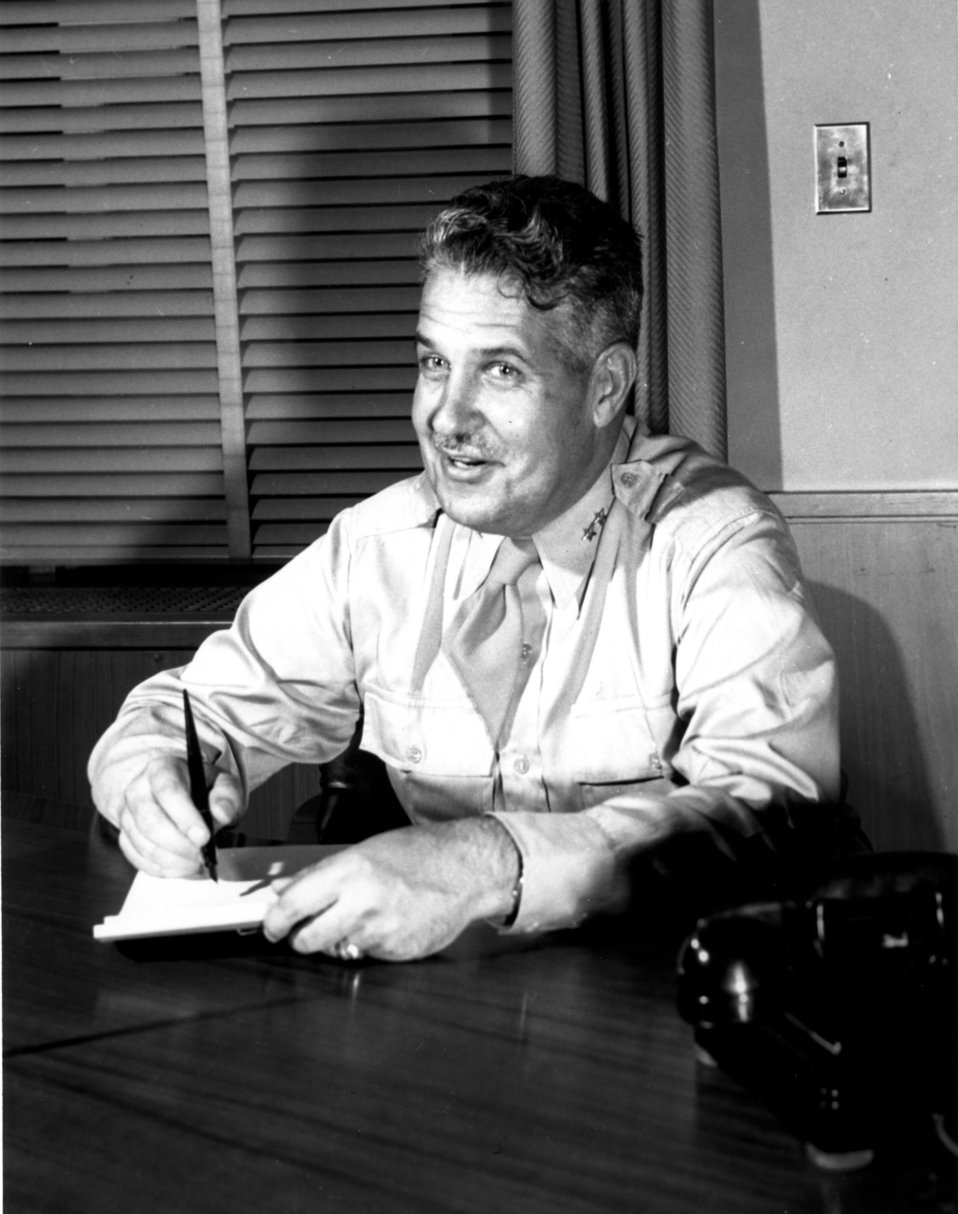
General Groves at Oak Ridge